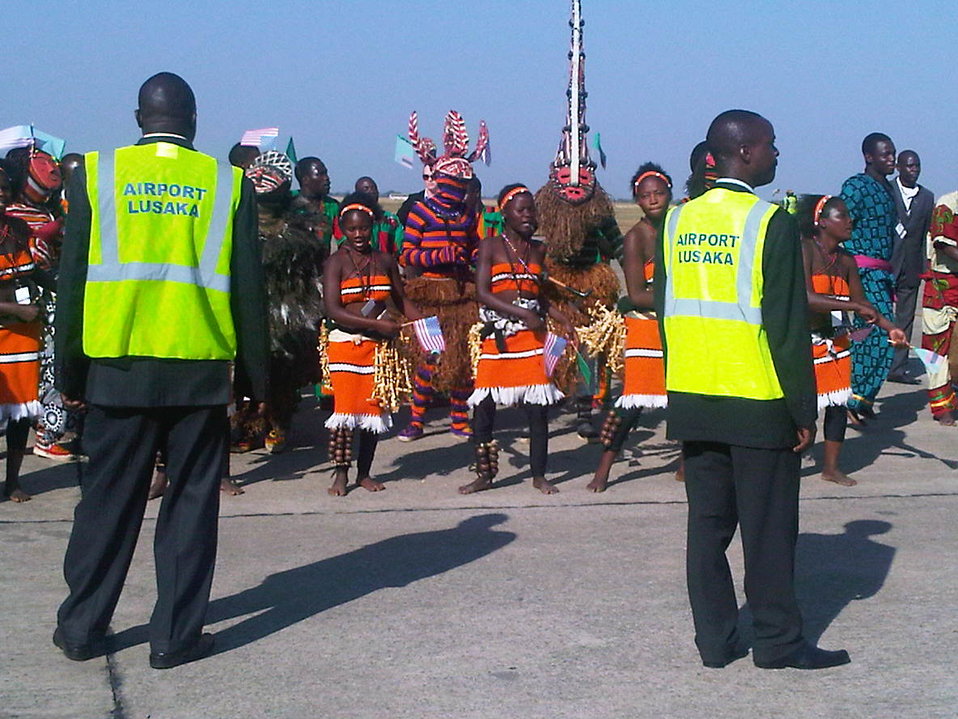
Zambian Dancers Welcome Secretary Clinton to Lusaka

Dancers perform during an official welcoming ceremony for Secretary of State Hillary Rodham Clinton in Lusaka, Zambia, on June 10, 2011.